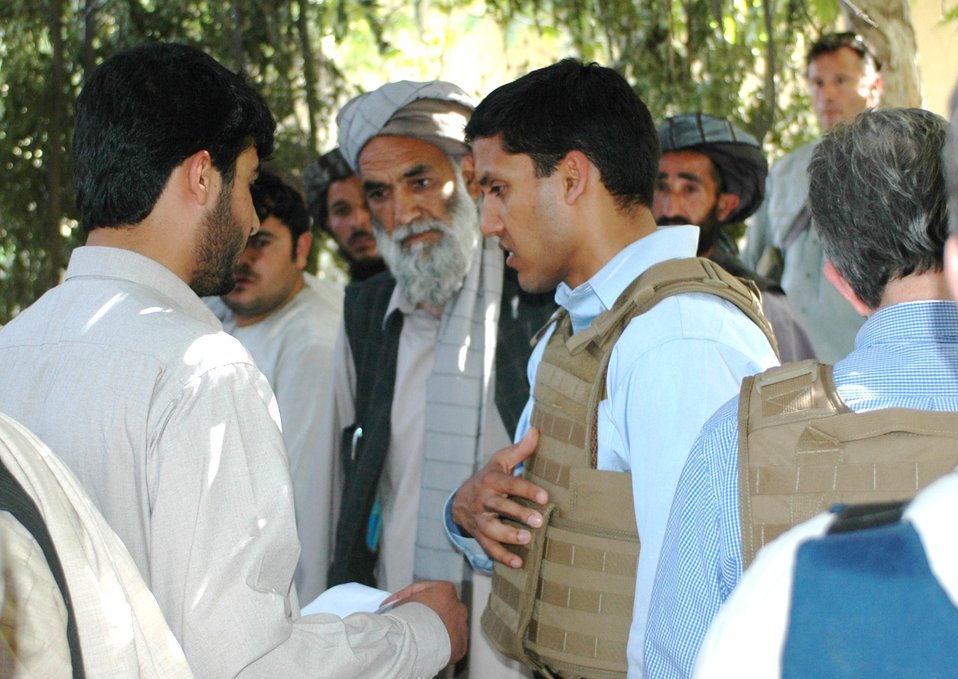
Dr Shah Visits Argandab April 10, 2010